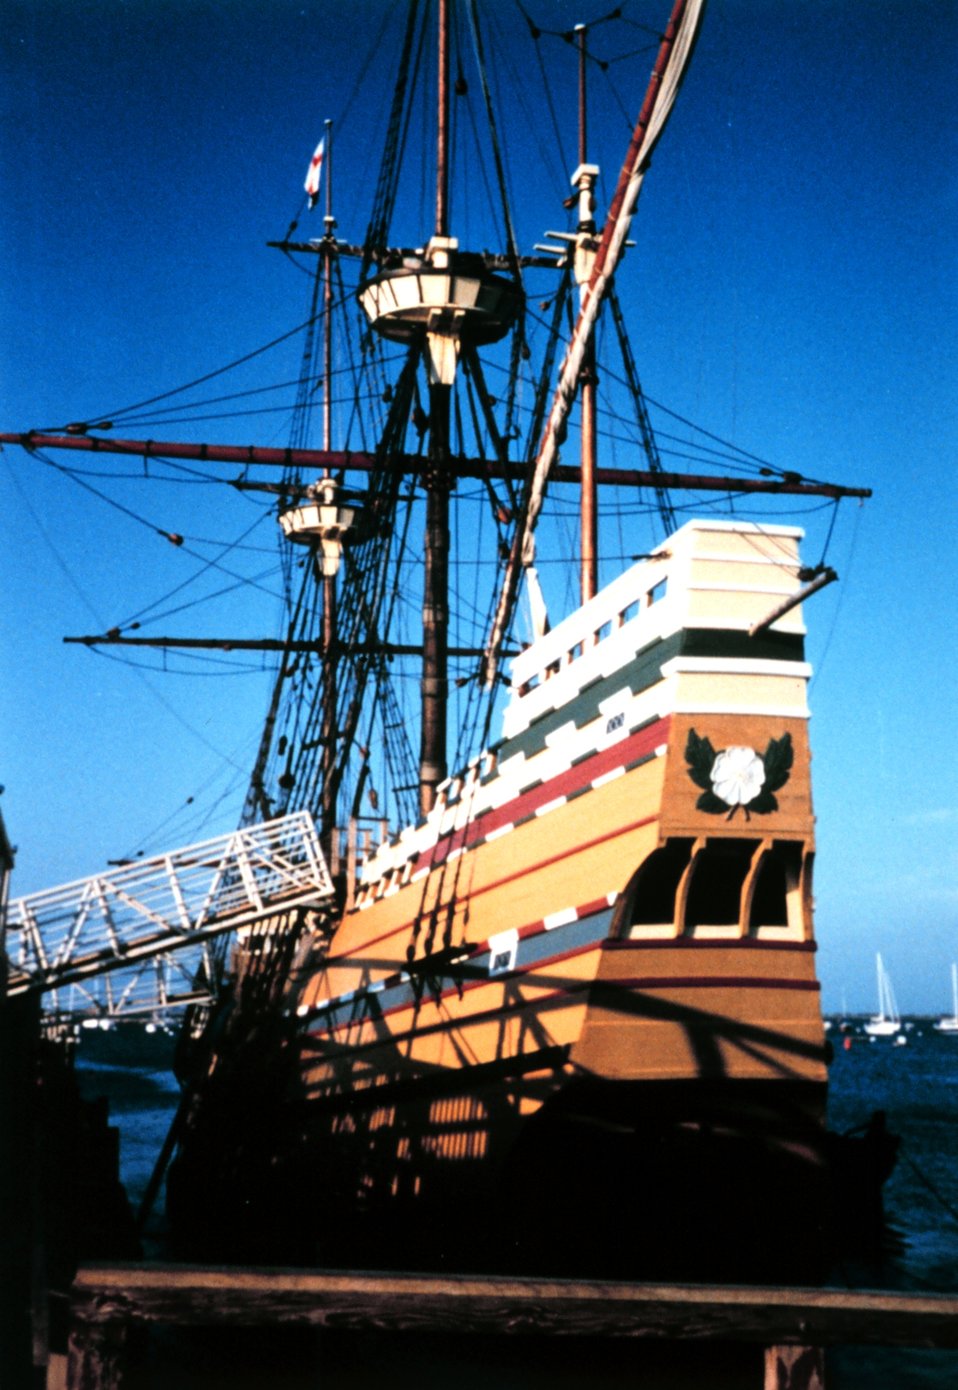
The Mayflower II at Plymouth, Massachusetts.